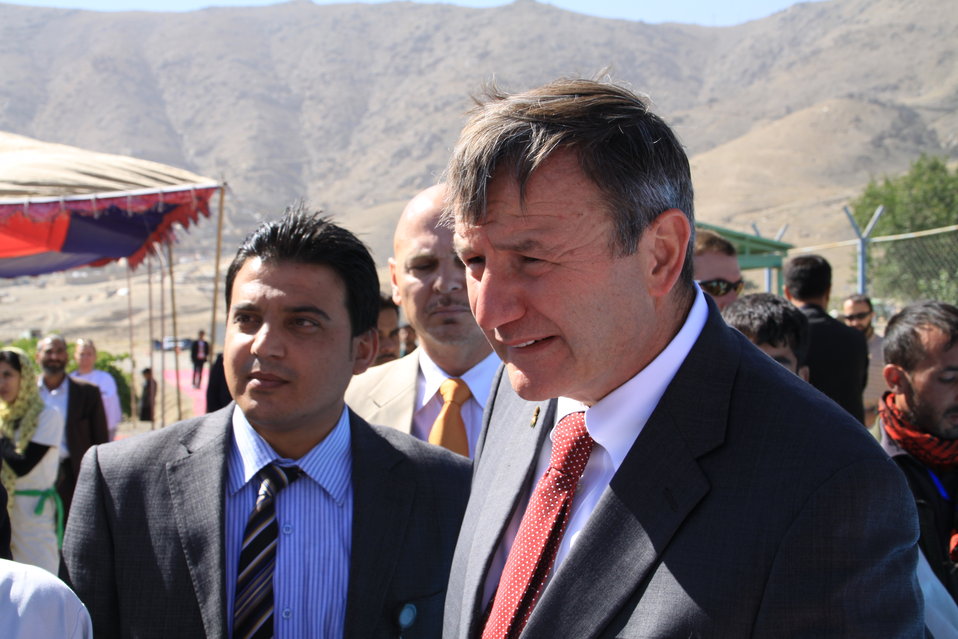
AVIPA Plus Wheat Seed Distribution 101005

US Ambassador Karl Eikenberry and USAID Acting Mission Director Kevin Brownawell joined the Minister of Agriculture, Irrigation and Livestock, H.E. Minister Mohammed Rahimi in signing a Memorandum of Understanding and distributing vouchers to area farmers for wheat and fertilizer.

US Ambassador Karl Eikenberry and USAID Acting Mission Director Kevin Brownawell joined the Minister of Agriculture, Irrigation and Livestock, H.E. Minister Mohammed Rahimi in signing a Memorandum of Understanding and distributing vouchers to area farmers for wheat and fertilizer.